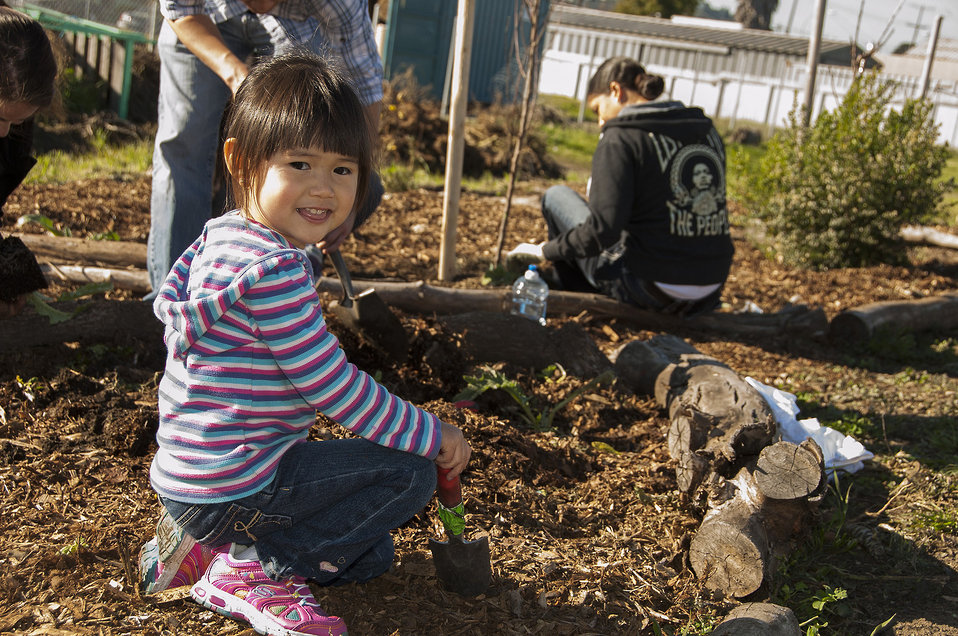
Editble forest Kwok maya

Maya Kwok (3) helps during a planting project at the Richmond, CA Edible Forest as part of the Martin Luther King Jr. Day of Service. Maya is the daughter of Alfred Kwok, director of operations for the U.S. Forest Service’s Pacific Southwest Research Station.